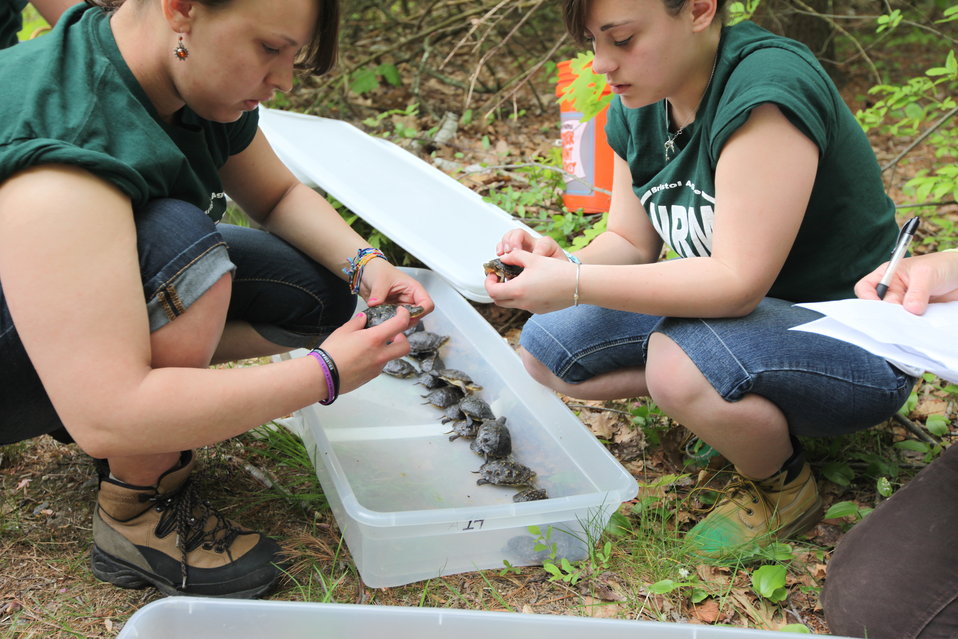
Kids Getting Ready to Release Turtles

Blanding's turtle release, Assabet River, MA.